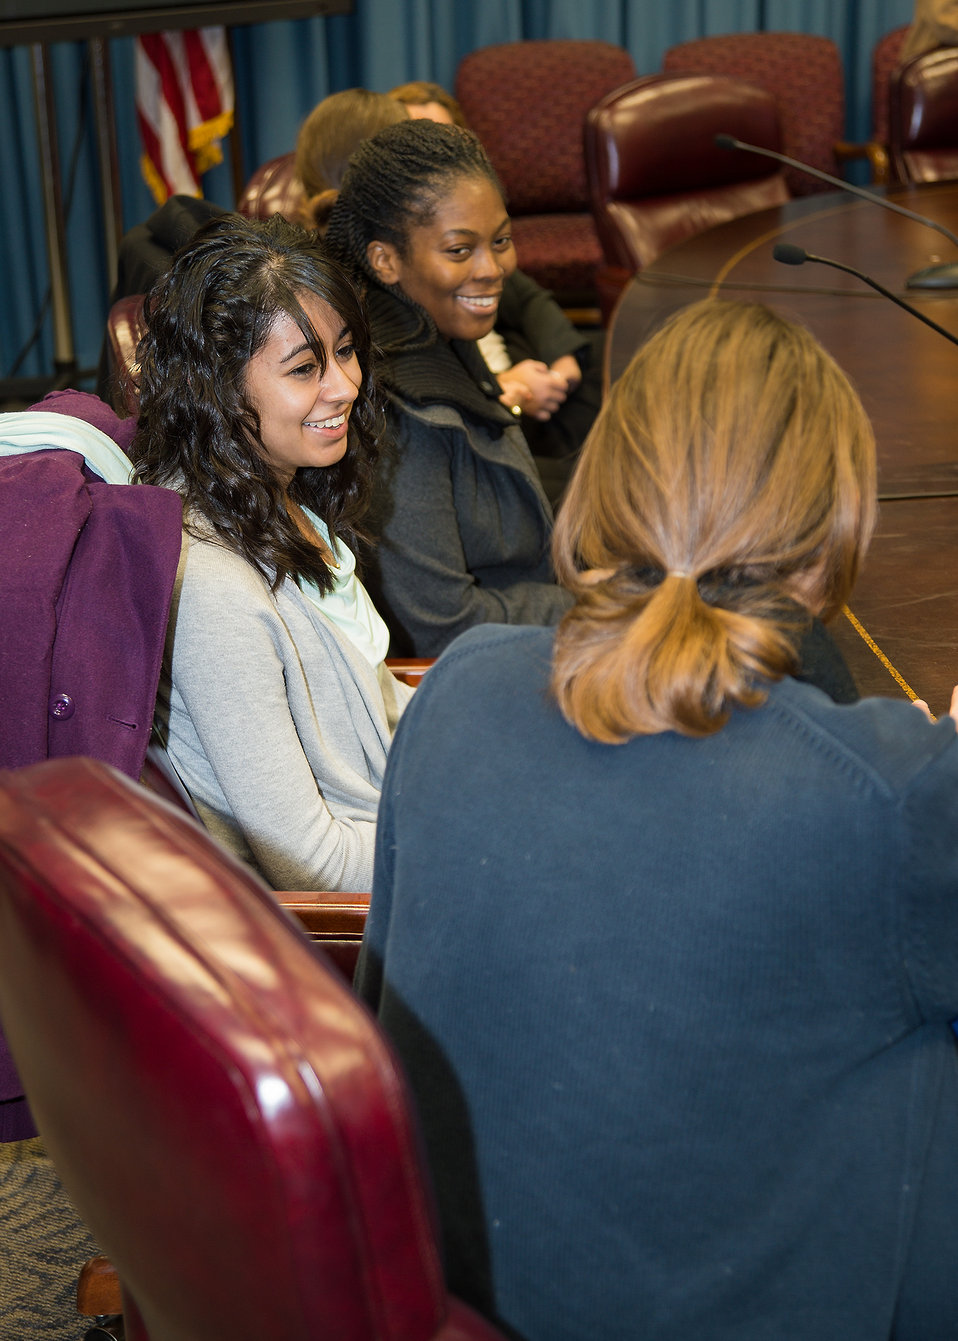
(L to R) Florida International University student Hermiose M. Dornevil, American University student Karen Flores Garcia, and Universidad del Sagrado, Corazon, Puerto Rico student Javier Munoz Ayala introduce themselves prior to the meeting of the Hispanic Association of Colleges and Universities (HACU) National Internship Program Fall 2014 Interns during the Pathways Programs for Students and Recent Graduates to Federal Careers program at the U.S. Department of Agriculture (USDA) on Tuesday, Dec. 3, 2013 in Washington, D.C.